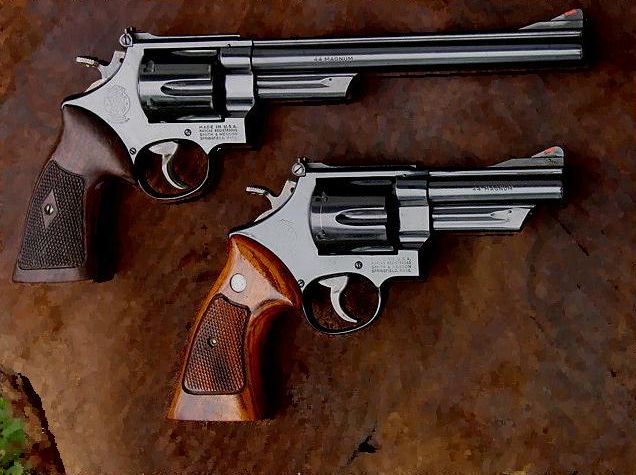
Model 29 .44 magnum